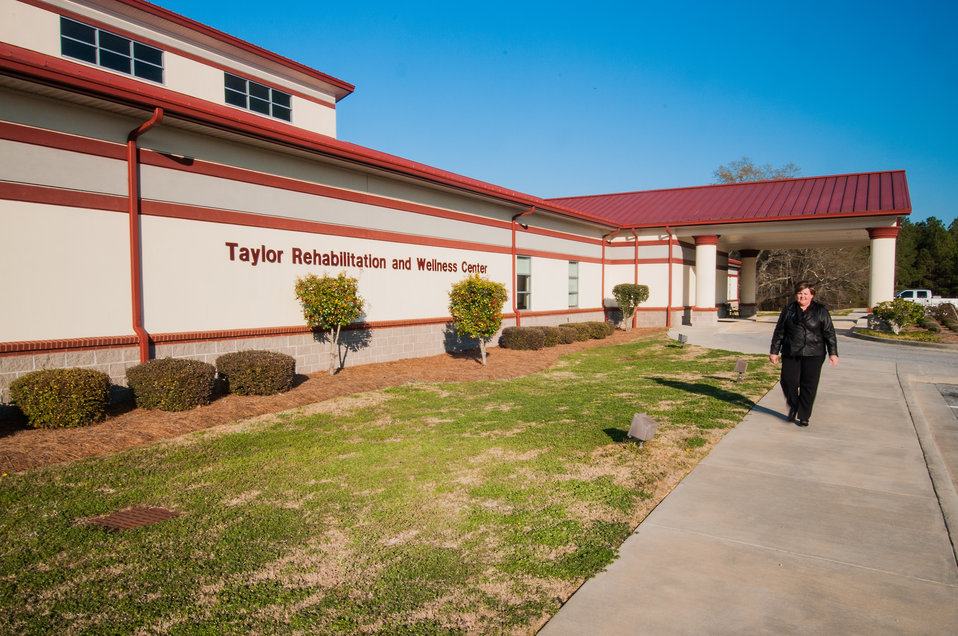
R.J. Taylor Memorial Hospital, Inc. Medical Records Director Dawn Warnock leaves the Taylor Rehabilitation and Wellness center in Hawkinsville, GA on Mar. 6, 2013. R.J. Taylor Memorial Hospital, Inc. has two hospitals located in very rural Pulaski and Bleckly Counties in Georgia. The counties have a high percentage of people living below the state average poverty level and are considered most economically distressed. The hospital in Hawkinsville, Pulaski County is considered the main campus and is a licensed private, not-for-profit acute care facility providing emergency, specialty and primary health care. The hospital has purchased an Electronic Medical Records System under an incentive program by the Federal government through the U.S. Department of Agriculture (USDA) Rural Development (RD) Community Facilities Loan (CF) that ensures fiscally responsive access to superior quality integrated health care.